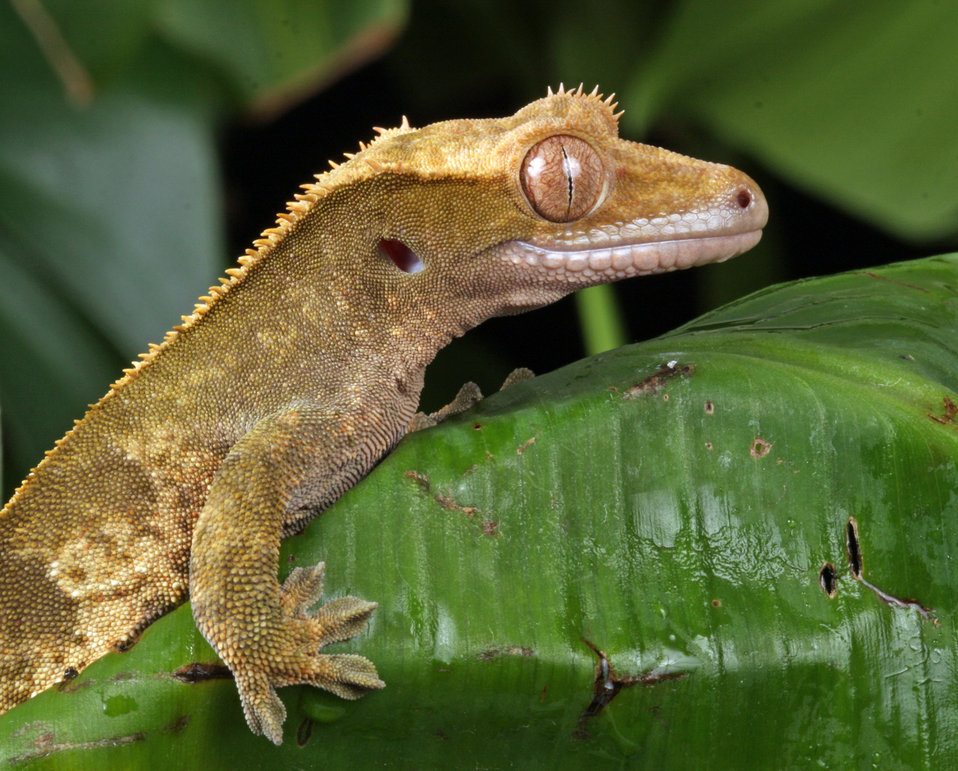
Gecko macro portrait

Close-up macro portrait of a new caledonian crested gecko.